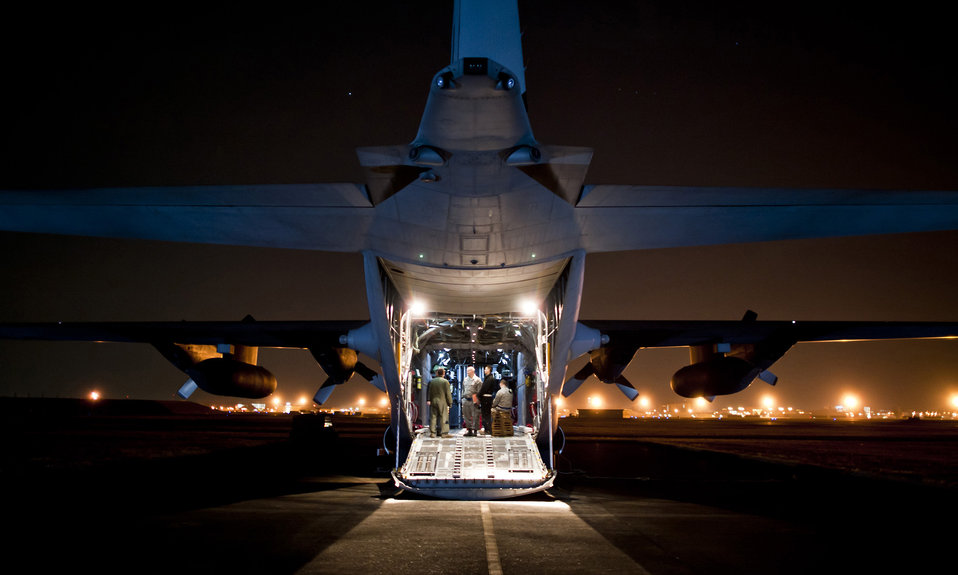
Maintainers keep C-130s flying to supply Operation Tomodachi

Maintainers from the 374th Aircraft Maintenance Squadron talk with loadmasters and flight engineers from the 36th Airlift Squadron while starting up a C-130 Hercules March 14, 2011, at Yokota Air Base, Japan. C-130s play a crucial role in disaster-relief operations because of their ability to land on dirt runways and other less-than-ideal landing conditions.